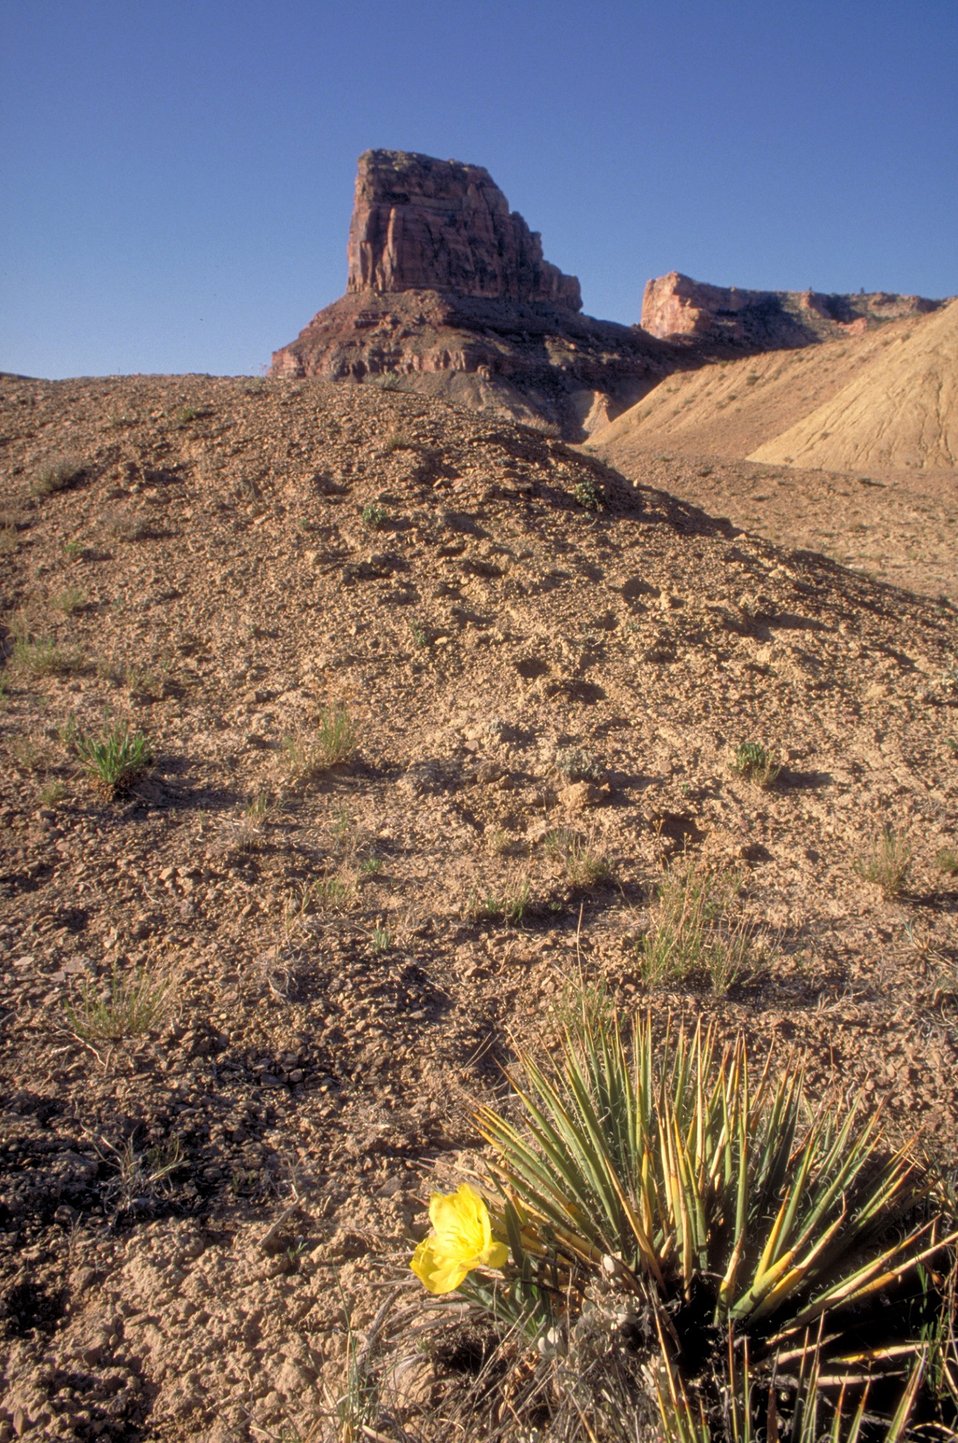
Bottleneck Peak, San Rafael Swell.